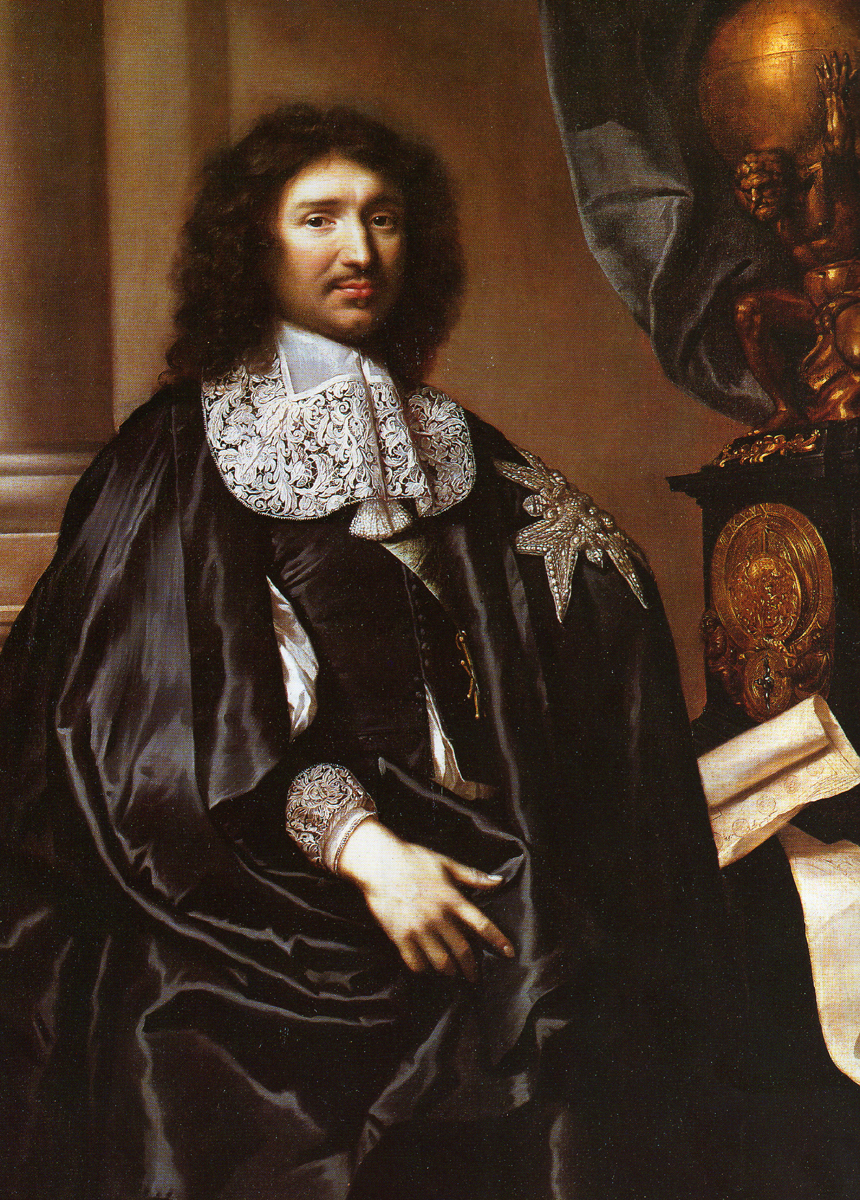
Lefebvre - Jean-Baptiste Colbert